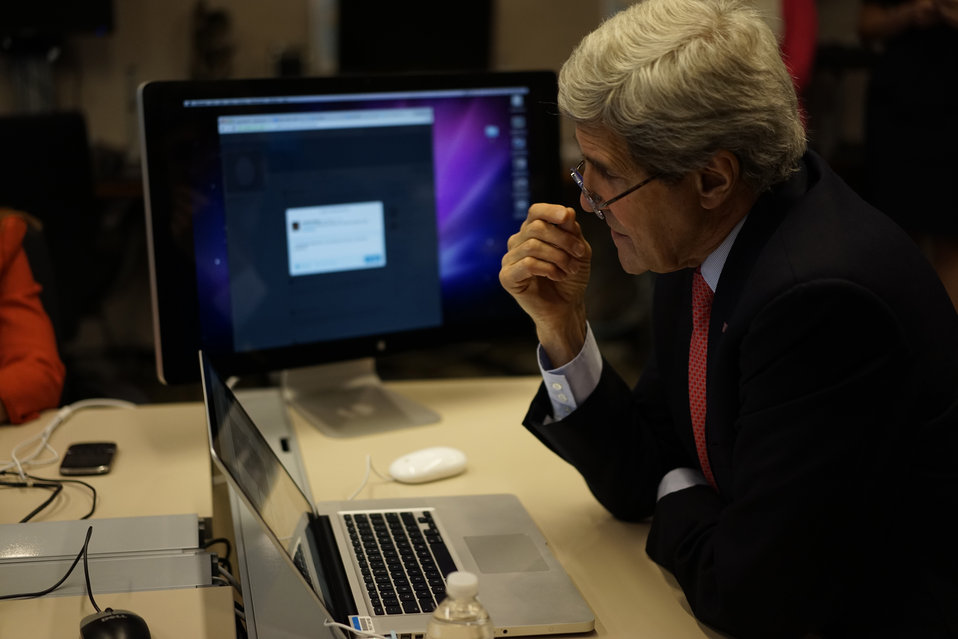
Secretary Kerry Hosts a Twitter Chat

U.S. Secretary of State John Kerry hosts a Twitter chat with the Young African Leaders Initiative Network at the U.S. Department of State in Washington, D.C., on May 9, 2014.